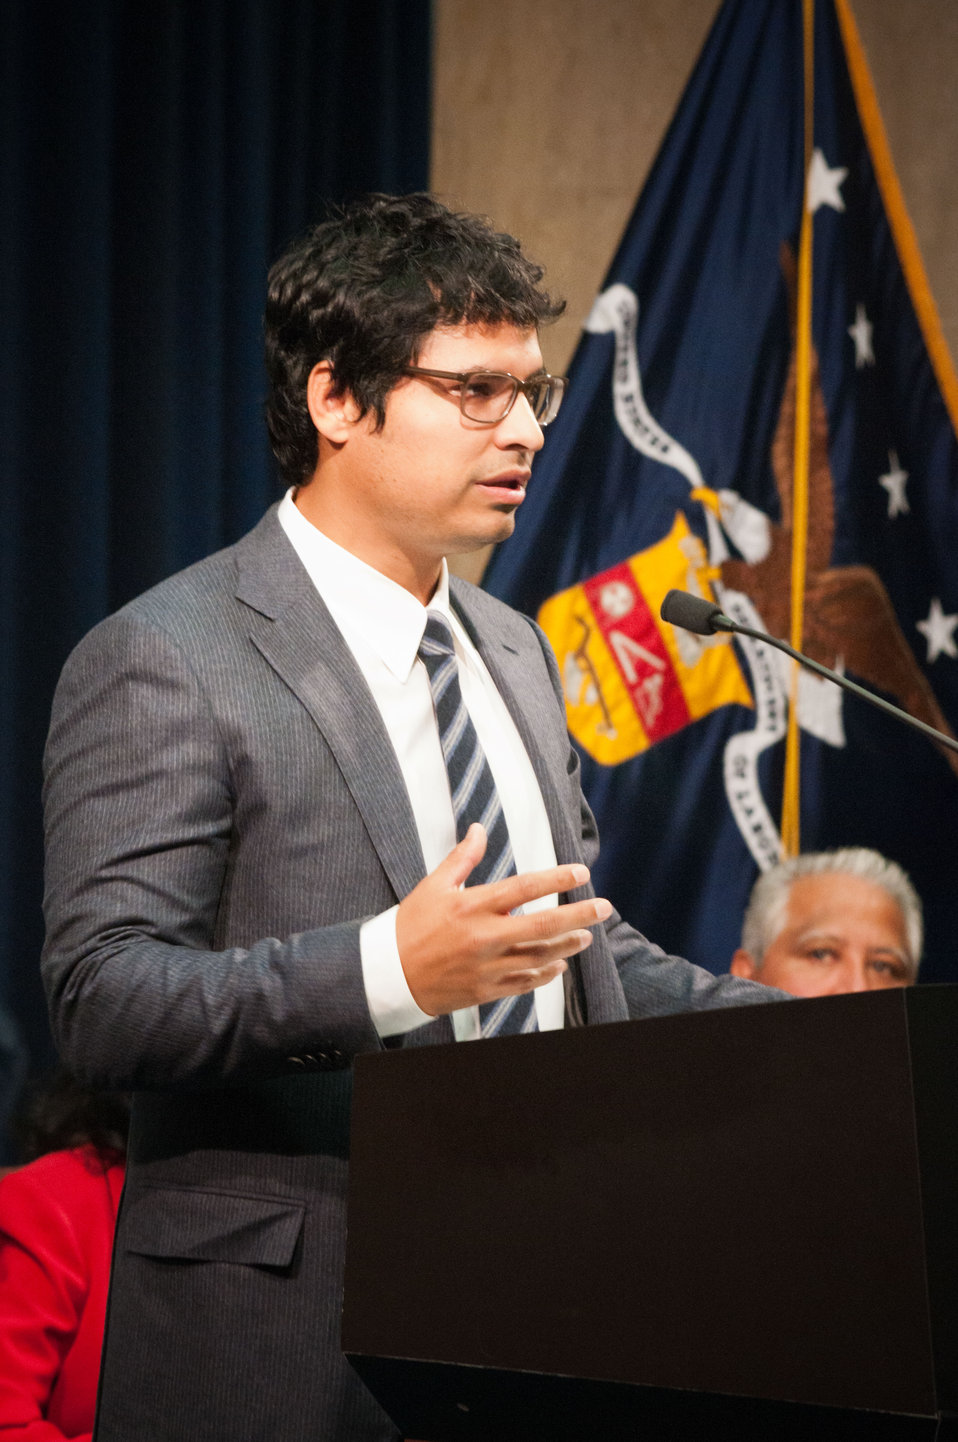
Michael Pena is the actor who will be portraying Cesar Chavez in a biography about the farm workers rights activist was the Master of Ceremonies at the dedication of the Cesar E. Chavez Memorial Auditorium at the United States Department of Labor in Washington, D.C., Monday, March 26, 2012. Chavez was a Mexican-American labor leader who used non-violent methods to fight for the rights of migrant farm workers in the southwestern United States. Chavez founded the Cesar Chavez Foundation, a group that advocates for the rights of farm workers, acting to increase wages and improve the working conditions and safety of farm workers.